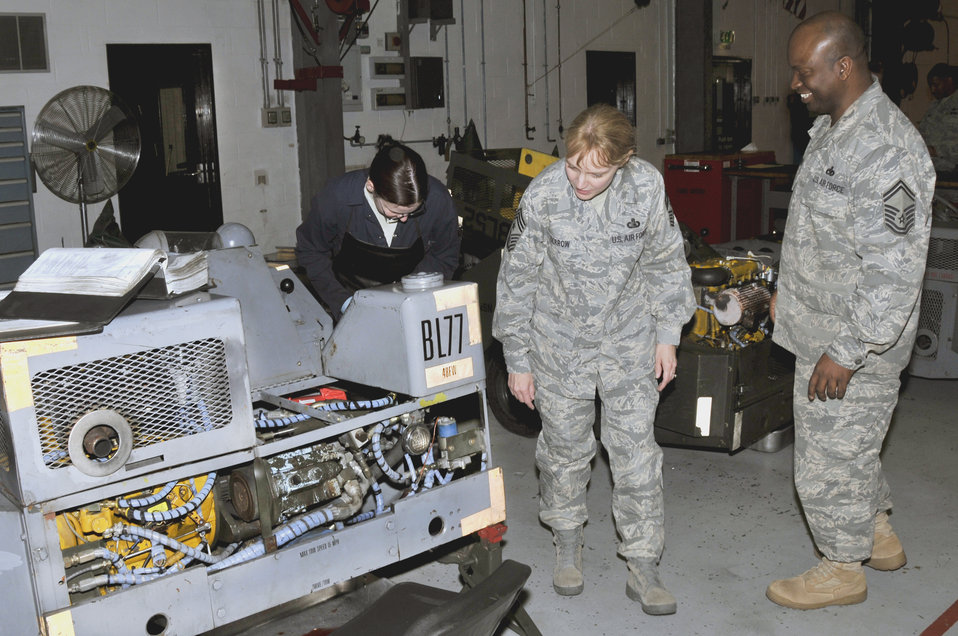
Command chief discusses Women's History Month

Chief Master Sgt. Pamela Derrow visits the Component Maintenance Squadron to learn about the Air Force Smart Operations for the 21st centure projects the squadron is creating March 25 at Royal Air Force Lakenheath, England. Chief Derrow visited RAF Lakenheath as a guest speaker for the Women's History Month luncheon, responded to Airmen's questions and concerns, and visited various units. Chief Derrow is the U.S. Air Forces in Europe command chief.